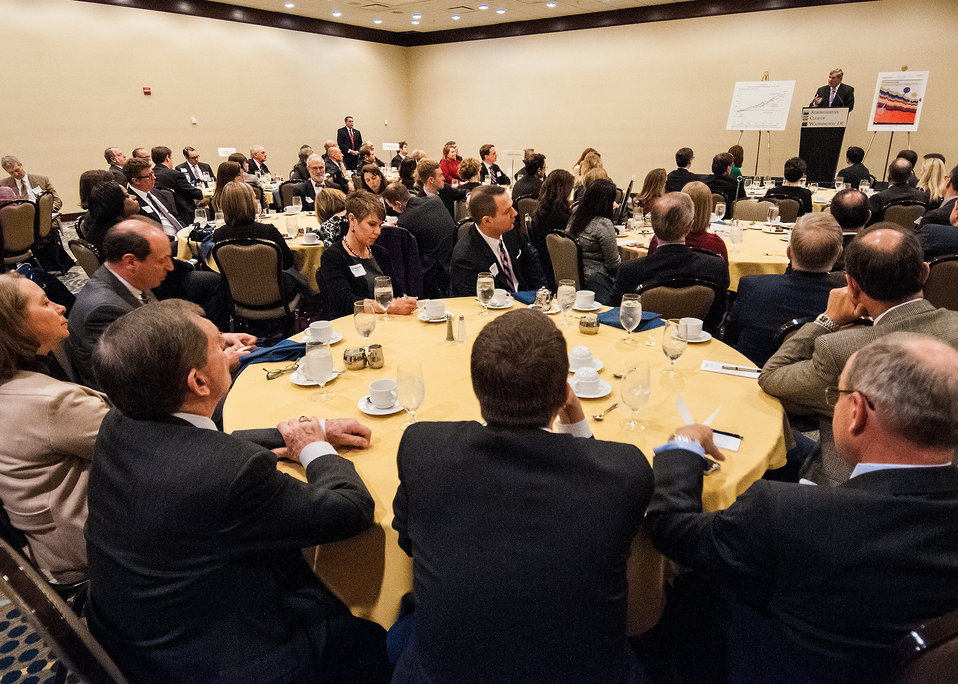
Agriculture Secretary Tom Vilsack spoke to the Agribusiness Club of Washington, D.C. on National Agriculture Day, Tuesday, Mar. 19, 2013. Secretary Vilsack discussed his four cornerstone priorities for the new rural economy – with special focus on building new markets for production agriculture and local/regional marketing of food. The graph to the right of Secretary Vilsack represents the progress in agriculture production form 1948-2009 and the graph to the left represents the progress in the cost of food in the same period.